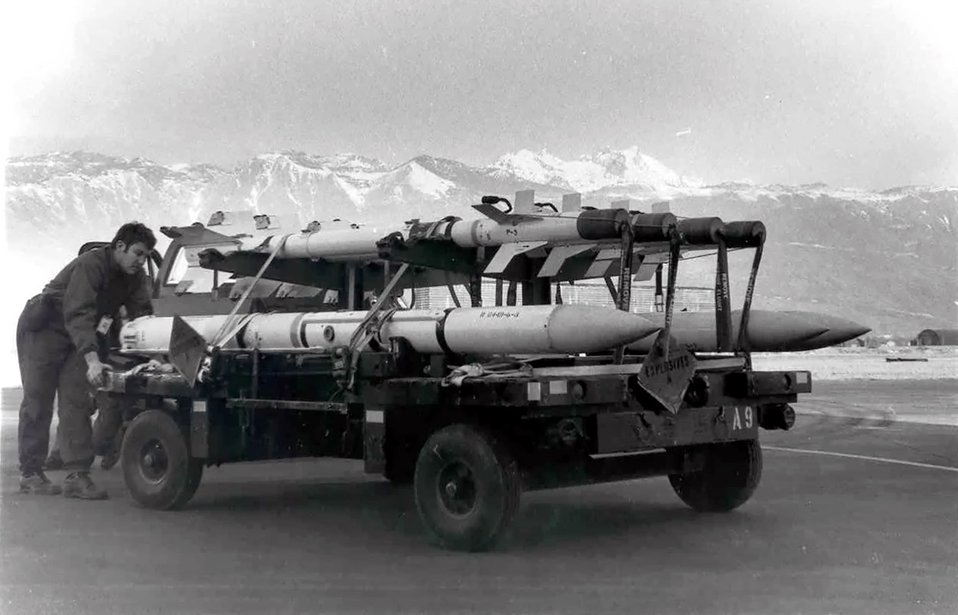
Operational exercise

An Airman from the 40th Tactical Group moves a MHU-12 trailer with AIM-9 Sidewinders (top) and AIM-7 Sparrows (bottom) during a January 1982 exercise at Aviano Air Base, Italy.